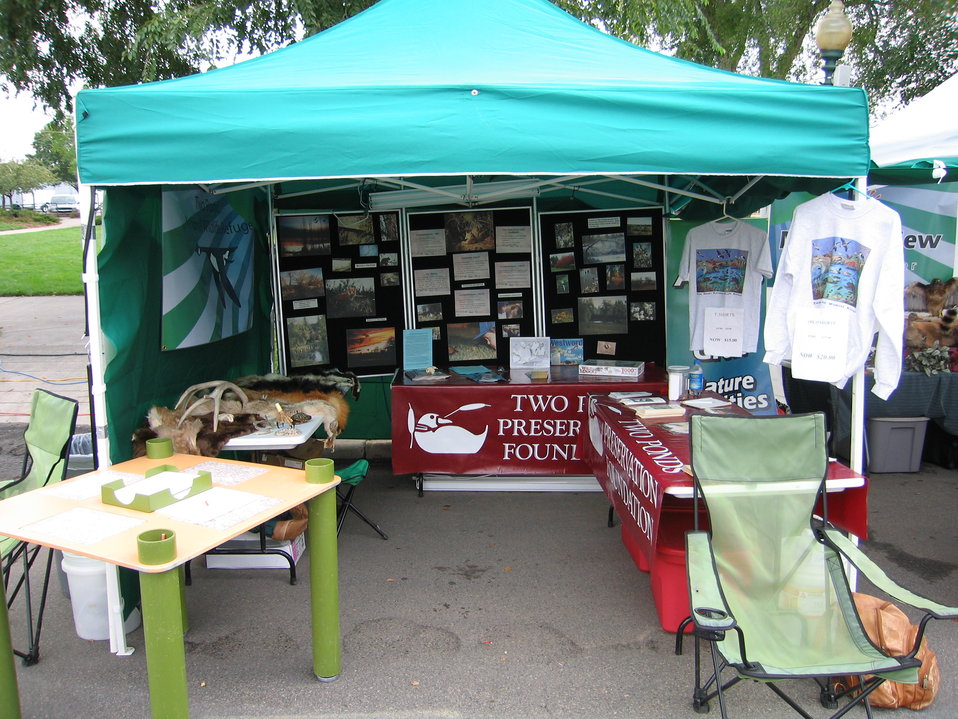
TPPF Booth